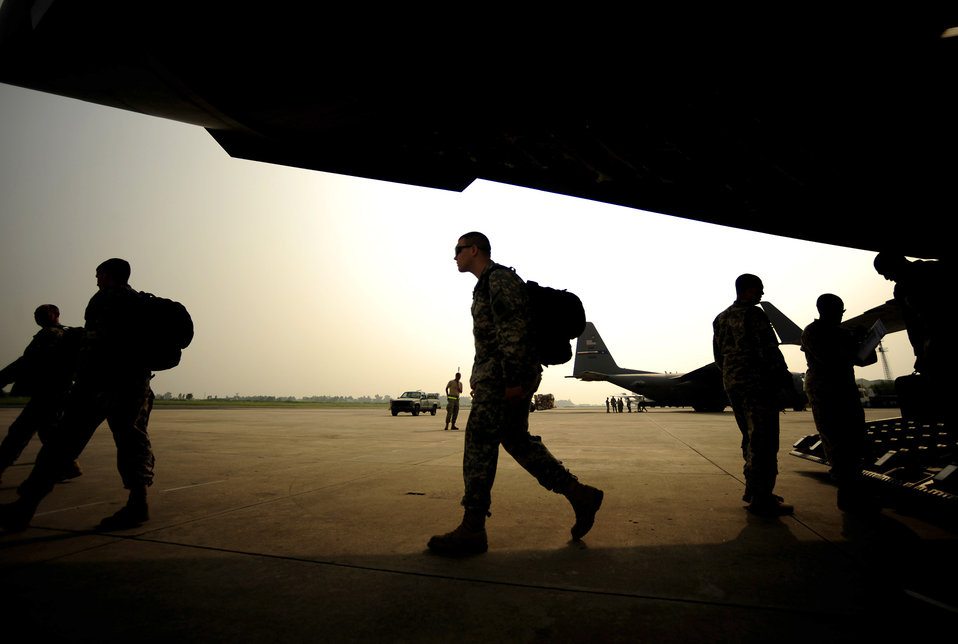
FLOOD RELIEF PAKISTAN

Soldiers from the 16th Combat Aviation Brigade from Fort Wainwright, Alaska, arrive Sept. 1, 2010, at Chaklala Air Force Base, Pakistan, aboard a C-17 Globemaster III aircraft in support of flood relief efforts.